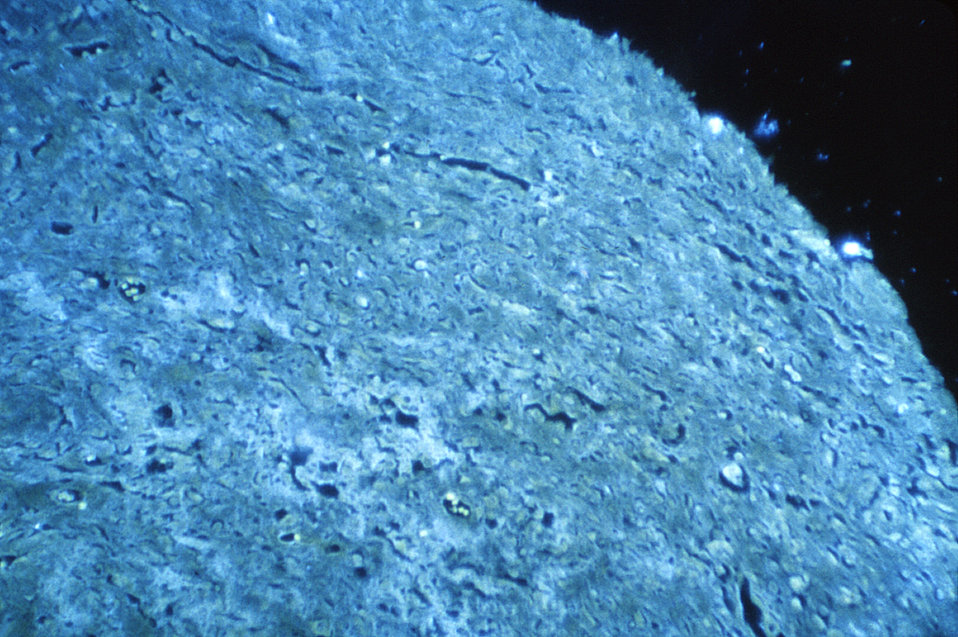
Magnified 125X, this "undigested", and fluorescent antibody-stained photomicrograph reveals the presence of Blastomyces dermatitidis antigens in this human lung tissue specimen.